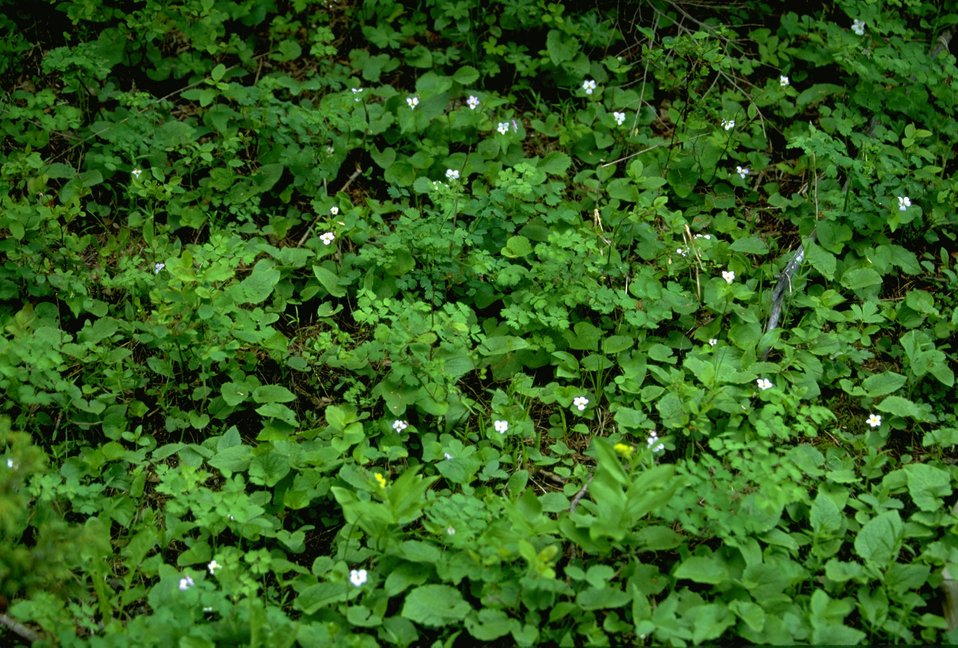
Flowers and greenery in the Judith Mountains